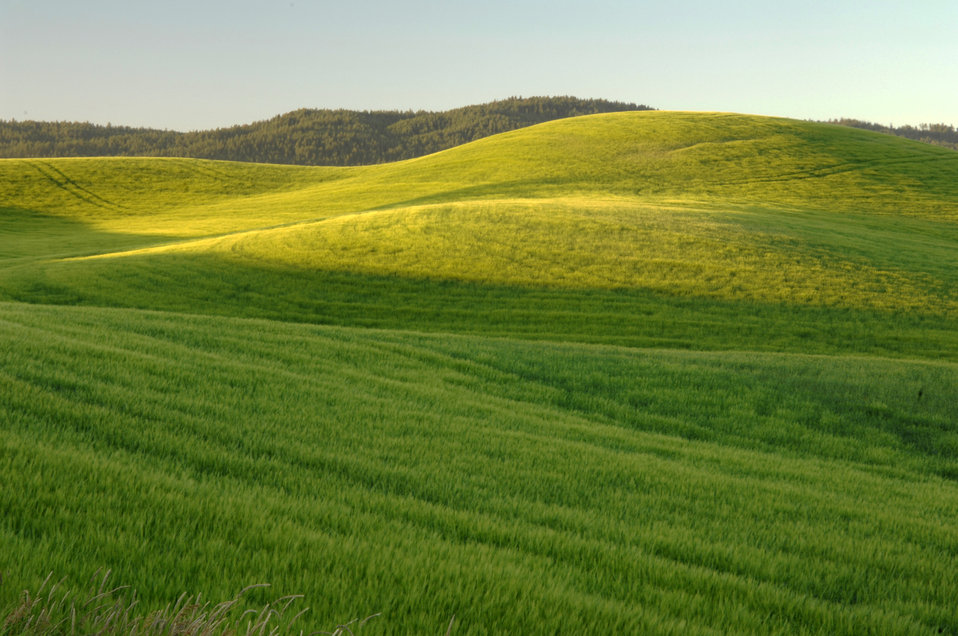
A farm located near Moscow, Idaho on July 9, 2008.